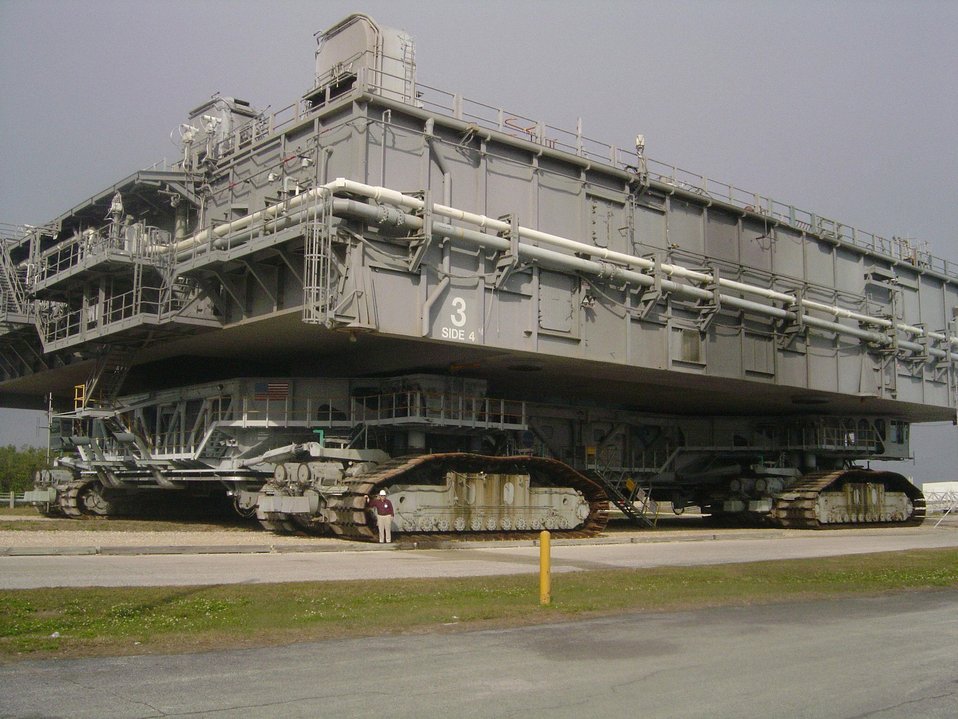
NASA'S MOBILE LAUNCH PLATFORM AND THE CRAWLER THAT CARRIERS THE SPACE SHUTTLE TO THE LAUNCH PAD.

SANDIA'S TOM CARNE, SEEN IN FRONT OF THE MOBILE LAUNCH PLATFORM, HAS ASSISTED NASA WITH A SERIES OF TESTS BEGINNING IN NOVEMBER, 2003 TO DEVELOP THE DATA NECESSARY TO UNDERSTAND THE ENVIRONMENT AND THE RESPONSE OF THE SPACE SHUTTLE VEHICLE DURING ROLLOUT. THE MASSIVE MOBILE LAUNCH PLATFROM SITS ON THE CRAWLER WHICH TRAVELS AT 0.9 MPH, FOR ABOUT 5-6 HOURS TO TAKE THE SPACE HUTTLE FROM KENNEDY SPACE CENTER'S VEHICLE ASSEMBLY BUILDING TO THE LAUNCH PAD.